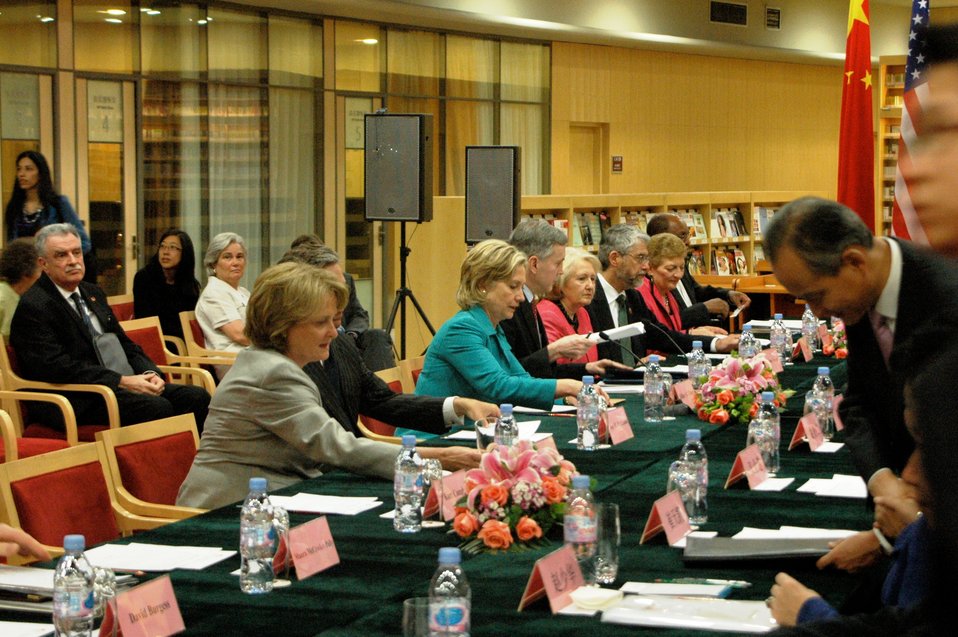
Secretary Clinton Meets With Chinese State Councilor Liu Yandong at People-to-People Dialogue

U.S. Secretary of State Hillary Rodham Clinton and Ambassador-at-Large for Global Women's Issues Melanne Verveer meet with Chinese State Councilor State Councilor Liu Yandong and other leaders at the People-to-People Exchange Dialogue on May 25, 2010, in Beijing, China.